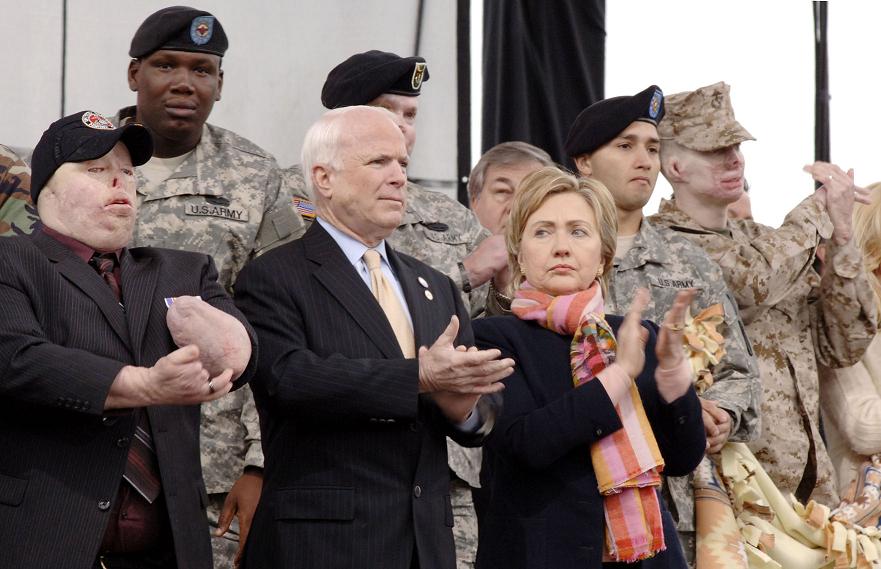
Center for Intrepid

Senators John McCain and Hillary Clinton honor servicemembers who were severely injured during Operations Iraqi and Enduring Freedom during the unveiling of the Center for the Intrepid, a rehabilitation center adjacent to Brooke Army Medical Center in San Antonio.